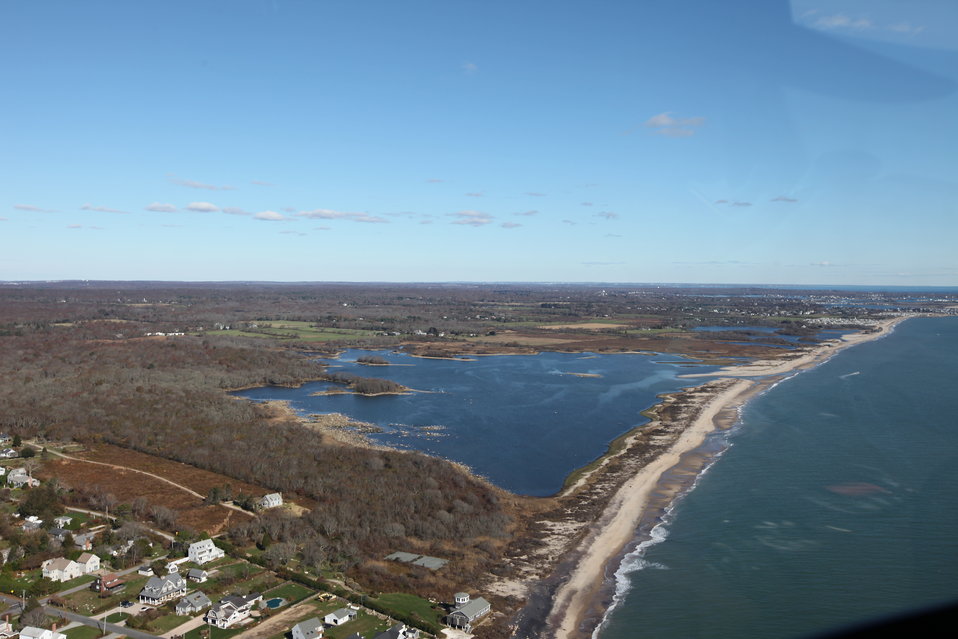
Aerial view of Trustom Pond National Wildlife Refuge in the aftermath of storm Sandy.